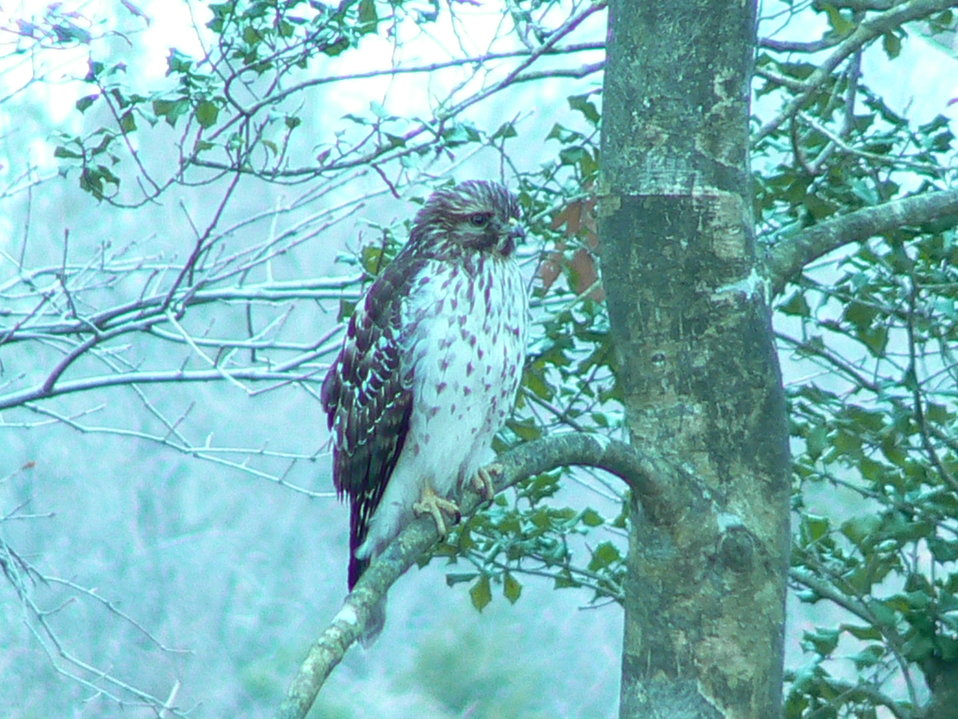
Red-shouldered hawk at Cape May National Wildlife Refuge.